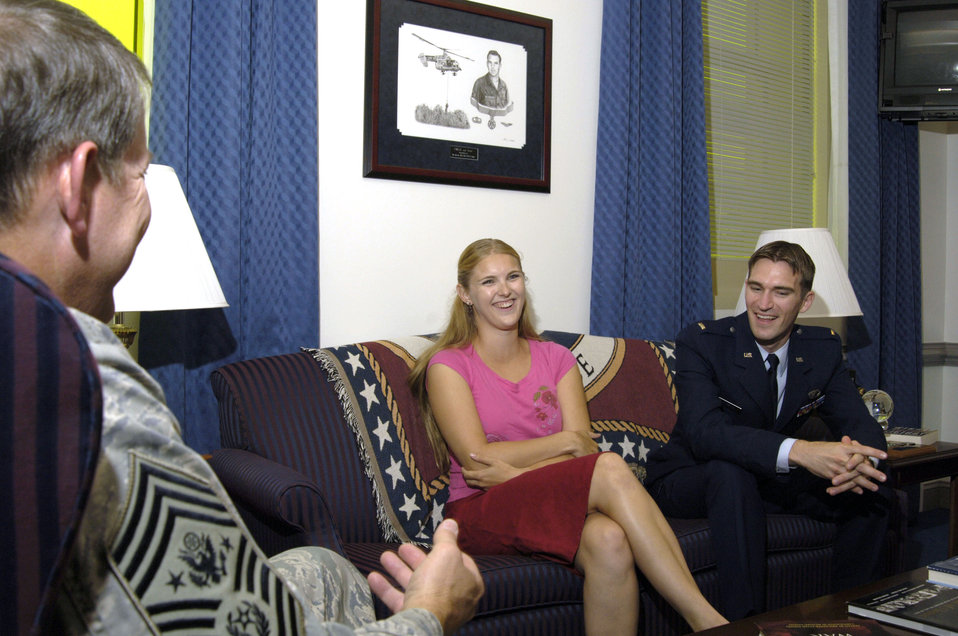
CMSAF: We can all learn from each other

Chief Master Sgt. of the Air Force Rodney J. McKinley talks with 2nd Lt. Paul Griffith and his wife, Catherine, about their experiences in the Air Force.